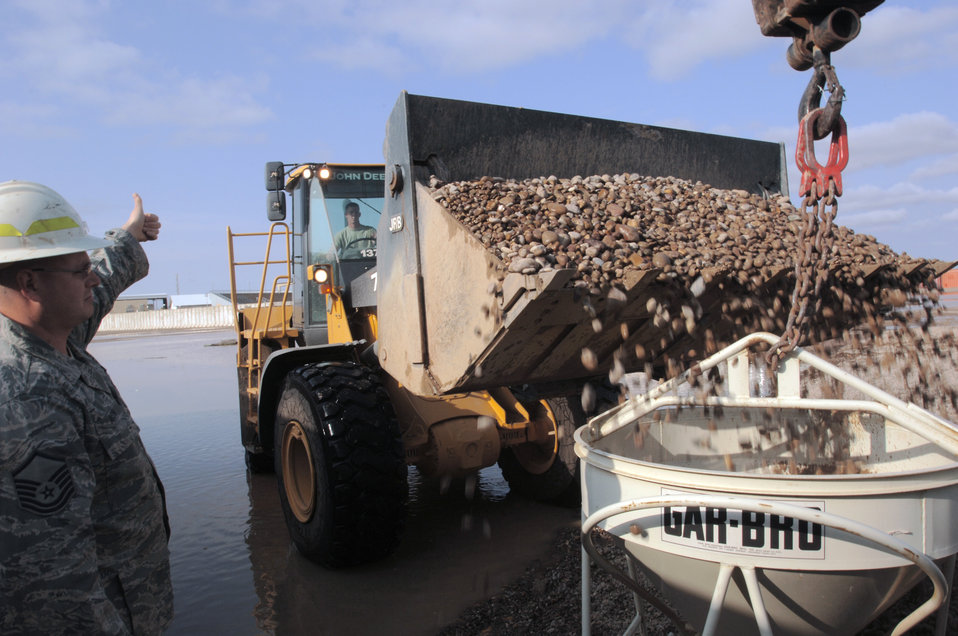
Can't stop the rain

Master Sgt. Richard Winter signals a front-end loader to dump a load of rock into a concrete bucket Oct. 25 at Joint Base Balad, Iraq. The bucket will be moved by crane into low areas flooded with water. Sergeant Winter, an electrical systems craftsman with the 332nd Expeditionary Civil Engineer Squadron, is deployed from McChord Air Force Base, Wash. His hometown is Pittsburgh.